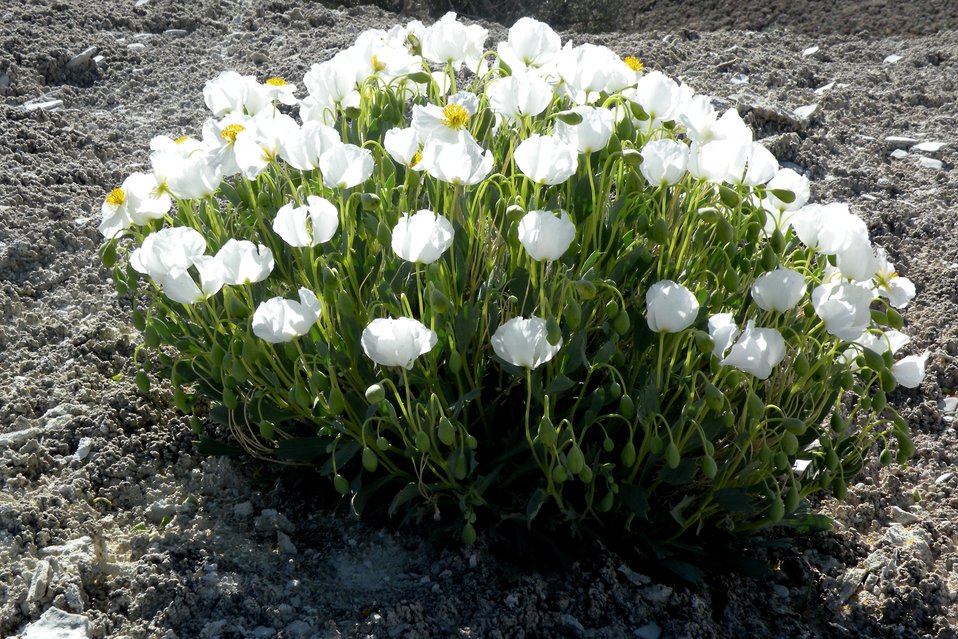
Dwarf Bearclaw-Poppy (Arctomecon humilis)

Dwarf bearclaw-poppy, (Arctomecon humilis), is a Federally listed endangered plant that is endemic to Washington County, Utah. A member of the poppy family, this species is a perennial herb that produces white flowers which bloom from mid-April through May.

Dwarf bearclaw-poppy is found on clay soils derived from the Moenkopi Formation. It occurs on rolling low hills and ridge tops, often on barren, open sites in warm desert shrub communities, at elevations ranging between 2,700 and 3,330 feet. The species' habitat is in an area of rapid population growth, and the low barren hills on which the dwarf bearclaw-poppy grows are impacted by development and off-road vehicle use. The poppy is listed as endangered.